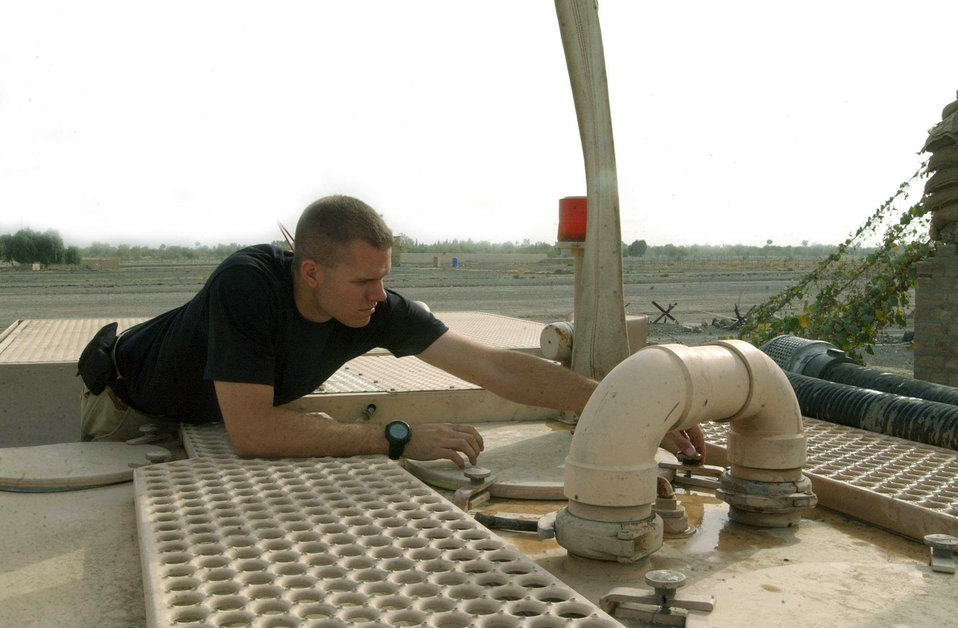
Airmen run fire department at forward operating base

FORWARD OPERATING BASE SALERNO, Afghanistan -- Senior Airman Sean Barnette secures the lid on a fire truck reservoir here after ensuring it is full for the next emergency. Airman Barnette is a firefighter with the 376th Expeditionary Civil Engineer Squadron from Manas Air Base, Kyrgyz Republic. Airmen from Manas AB rotate duty here so the base has fire protection.